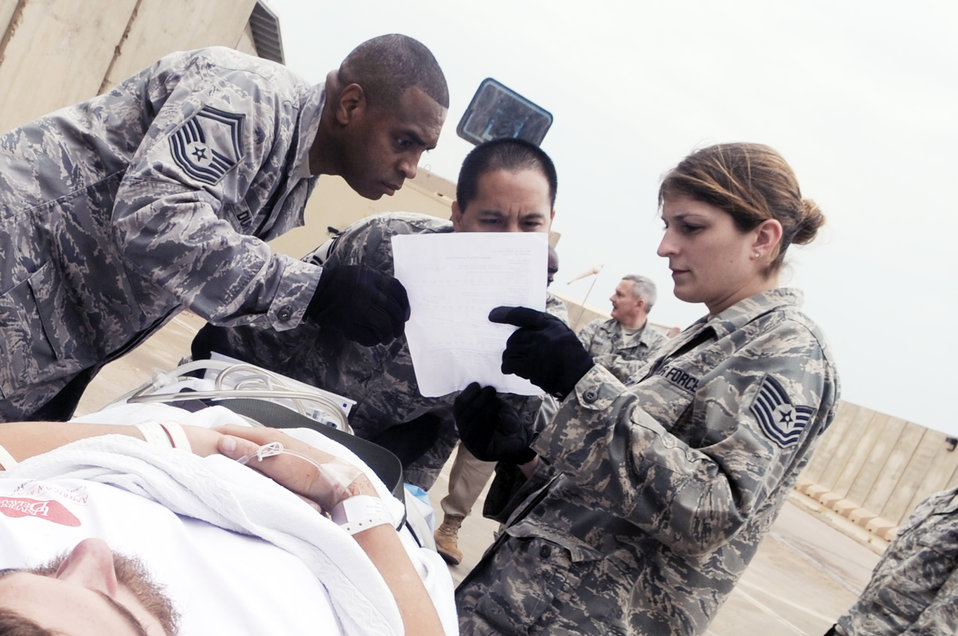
Balad become divert base for wounded troops

332nd Expeditionary Medical Group members look over a patient's information before taking him inside the Air Force Theater Hospital during an aeromedical evacuation mission April 17, 2010, at Joint Base Balad, Iraq.